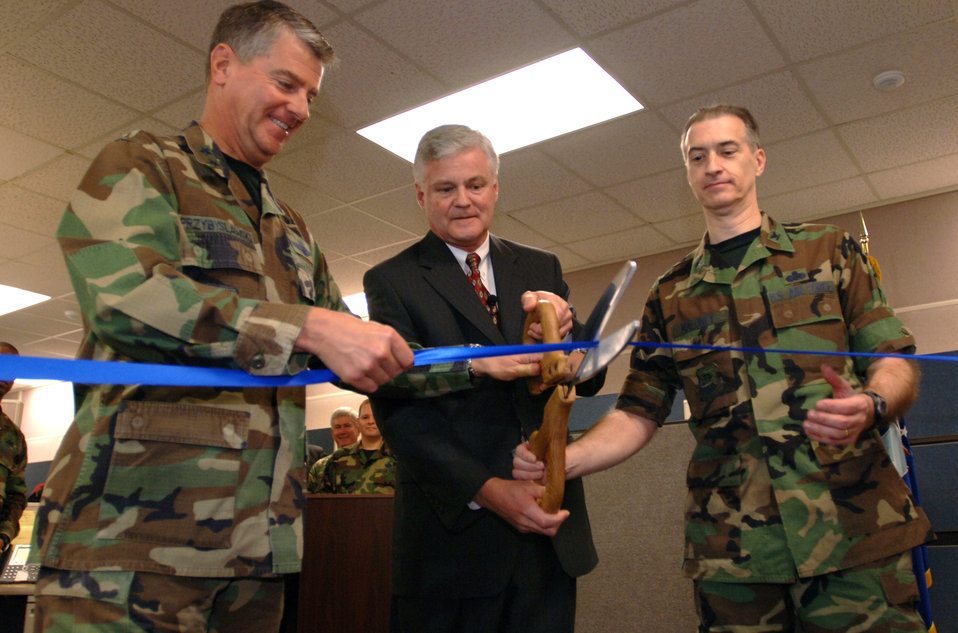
Personnel Services Delivery System initiative begins

Left to right, Maj. Gen. Tony Przybyslawski, Air Force Personnel Center commander, Roger Blanchard, deputy A1, and Col. Michael Maloney, AFPC director of personnel, cut the ribbon to symbolize the operational beginning of the new Personnel Service Delivery System at Randolph Air Force Base, Texas, on Friday, March 31, 2006.